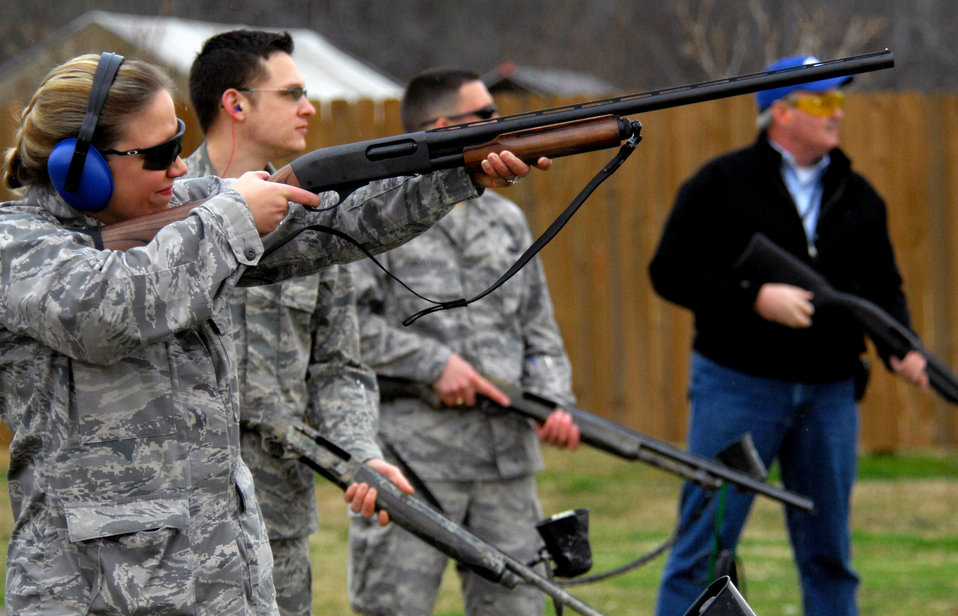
Airmen participate in 2009 ESPN Bassmaster Classic

Maj. Melissa Simmons shoots clay targets Feb. 21 at Barksdale Air Force Base, La. Airmen joined members of ESPN for a morning at the Red Chute Shotgun Sports Club on base. Major Simmons is a 2nd Medical Group optometrist.